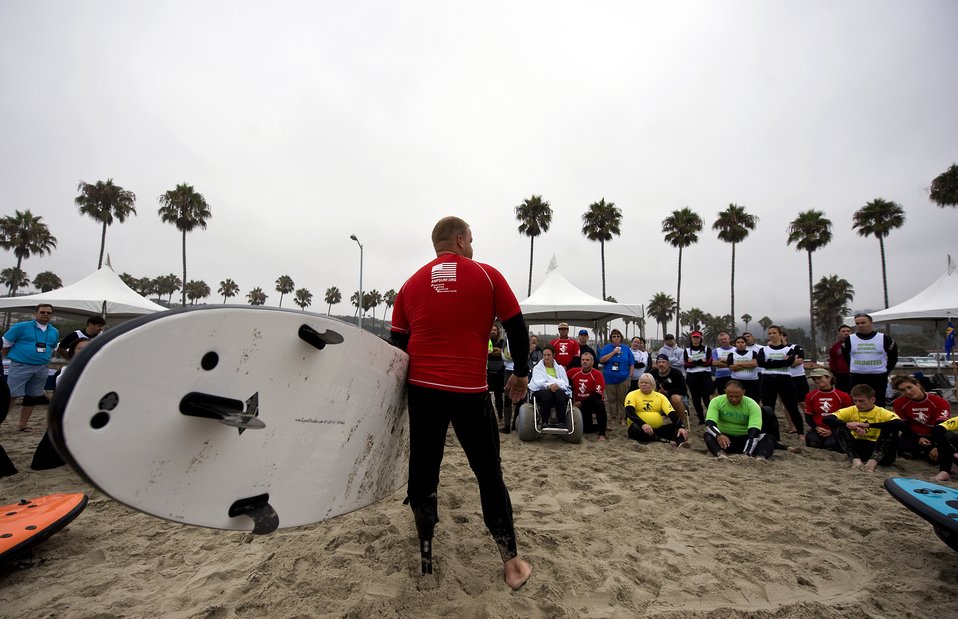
Disabled veterans sports clinic begins in San Diego

Surf instructors prepare veterans for an upcoming day on the waves during the opening day of events for the 2010 National Veterans Summer Sports Clinic Sept. 20, 2010, at La Jolla Beach in San Diego, Calif. The National Veterans Summer Sports Clinic Program gives veterans with disabilities an opportunity for self development and challenge through education and recreational activities.